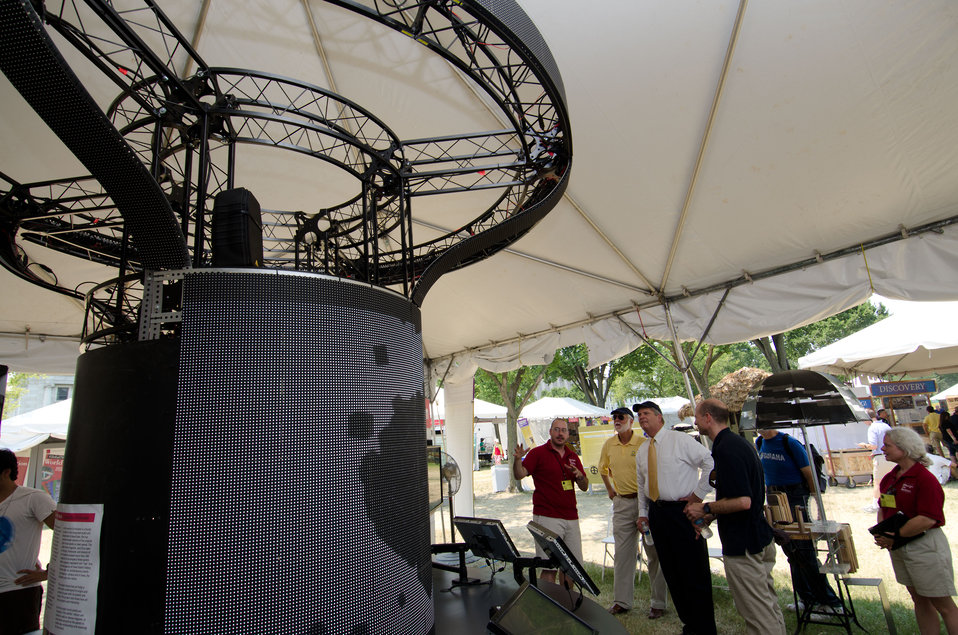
Agriculture Secretary Tom Vilsack, white shirt, listens to Iowa State University Industrial Design Director David Ringholtz talk about the University’s “Transforming Communities: Design in Action,” exhibition at the 2012 Smithsonian Folklife Festival, on the National Mall in Washington, D.C., on Friday, June 29, 2012. The University says, “Iowa State’s folklife festival exhibit highlights the central role of design in the land-grant mission, and extension’s past, present and future impact on communities. It demonstrates a unique partnership between the College of Design and Extension and Outreach in applying creative problem solving to society’s complex challenges.' Their exhibition, “Transforming Communities: Design in Action,” is inspired by Abraham Lincoln’s 1862 national call to “think anew and act anew” to solve the monumental challenges of the era that spawned the Morrill Act. It features examples of the university's completed and ongoing projects in Iowa communities, touch screen workstations with games for children and adults, and interactive activities with Iowa State faculty and staff.” One of the three themes this year is “Campus and Community.” It celebrates the 150 years of the USDA and the Land-Grant University System. The U.S. Department of Agriculture (USDA) and the Land-Grant system extend education across the country, contributing to American agriculture success and rural prosperity. “Campus and Community” has demonstrations, discussions, hands-on activities, and entertainment to that showcase the many ways that this partnership works to improve American agriculture and rural life.